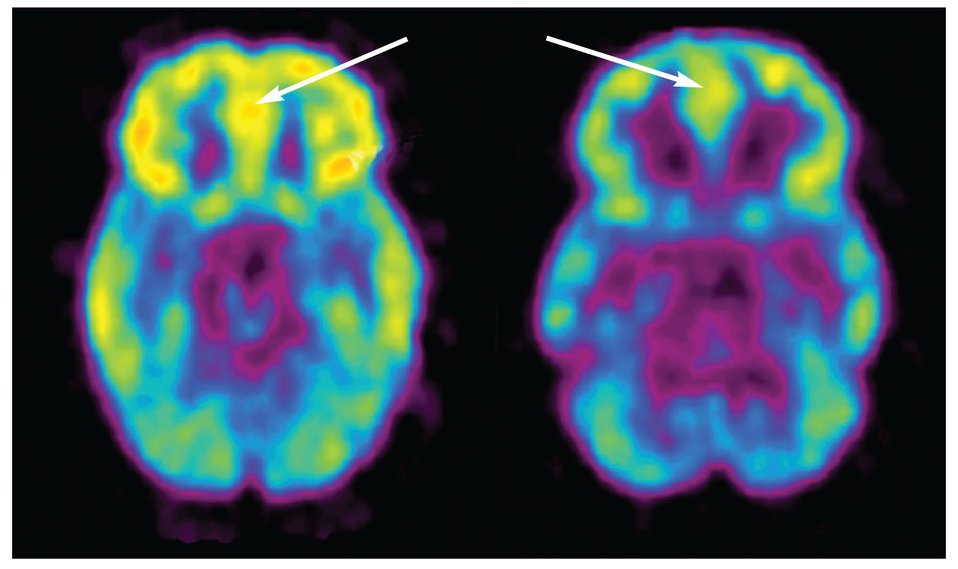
PET

Cocaine abusers have reduced metabolism in the orbitofrontal cortex